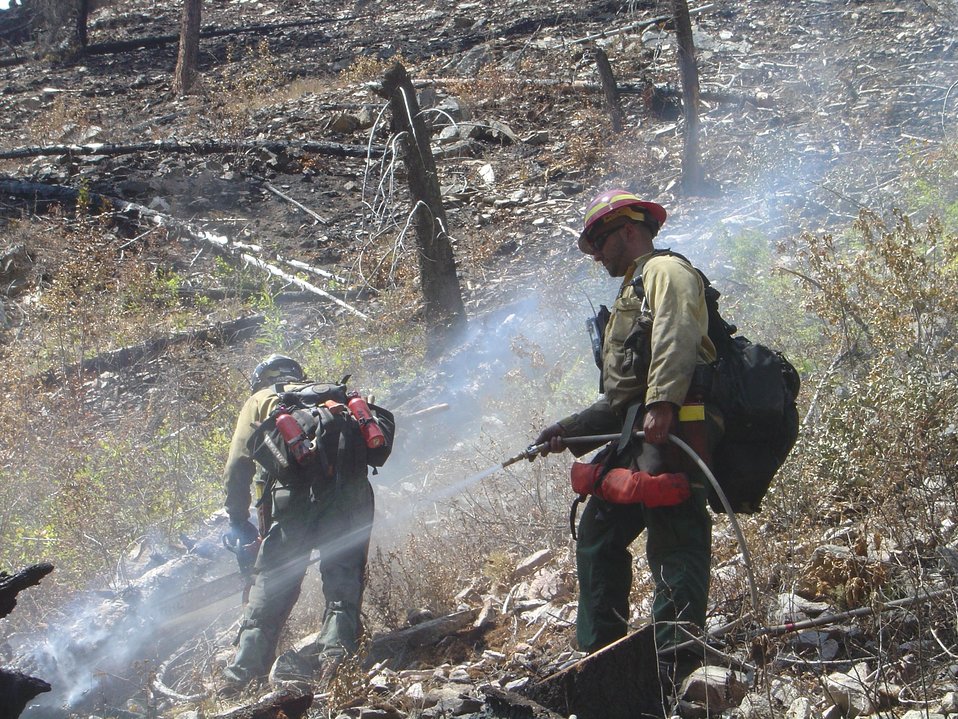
Engine crew with chainsaw mops up along Magruder Road at the Gold Pan Fire in the Bitterroot National Forest. The Gold Pan Fire in the Bitterroot National Forest near Conner, MT began by lightning on Jul. 16, 2013 by lighting have consumed approximately 16,330 acres.